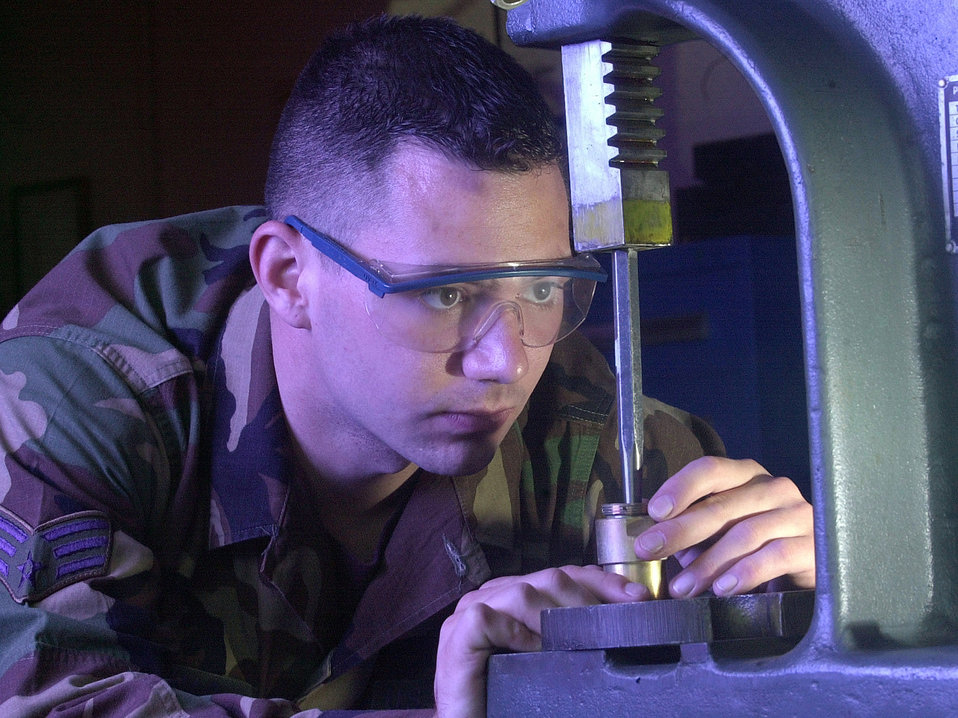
Arbor press

YOKOTA AIR BASE, Japan -- Senior Airman James McDonald, a pneudraulic specialist from the 374th Maintenance Squadron/Pneudraulic Element, Yokota Air Base, Japan, uses an Arbor press machine to build a spring holder for the main landing gear brake of a C-130 aircraft. The spring holder prevents excessive wear and tear of the landing gear. The pneudraulic element troubleshoots, maintains, removes, installs and modifies C-130 aircraft pneudraulic system components. They also manufacture, inspect, and proof-pressure test aerospace hydraulic hose assemblies.